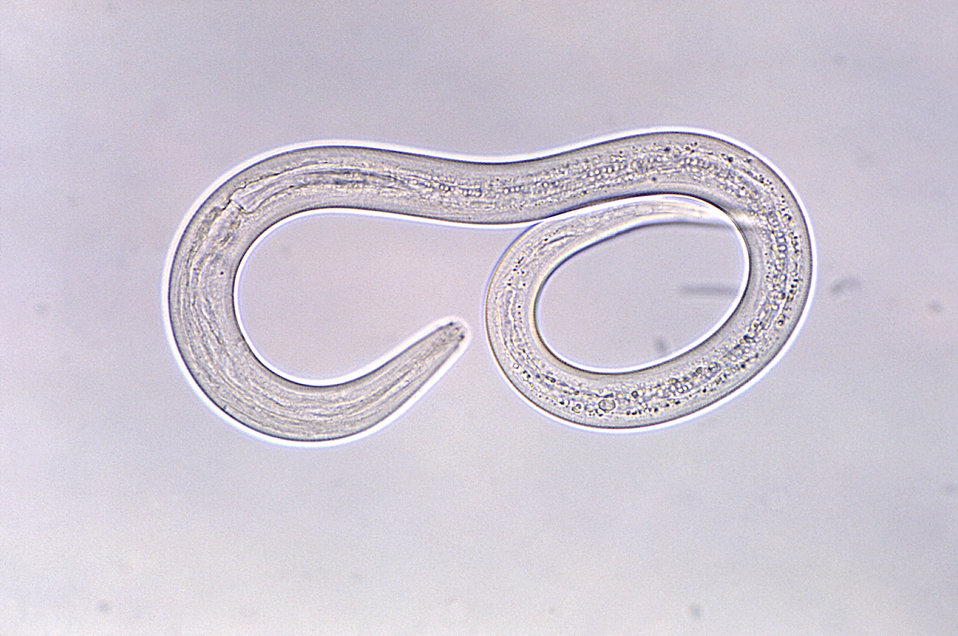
Hookworm filariform larva.